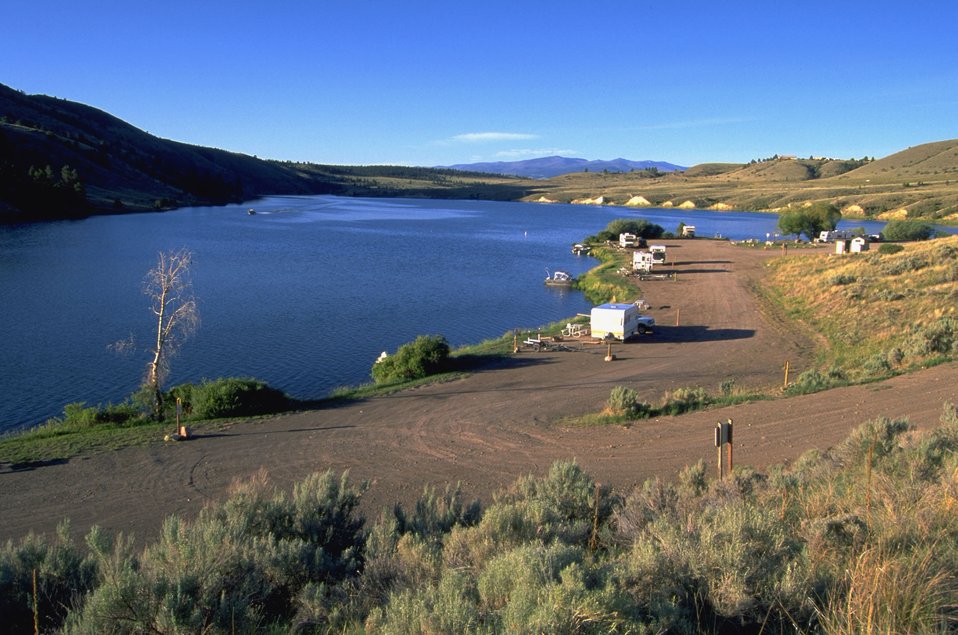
Cahin Lakes